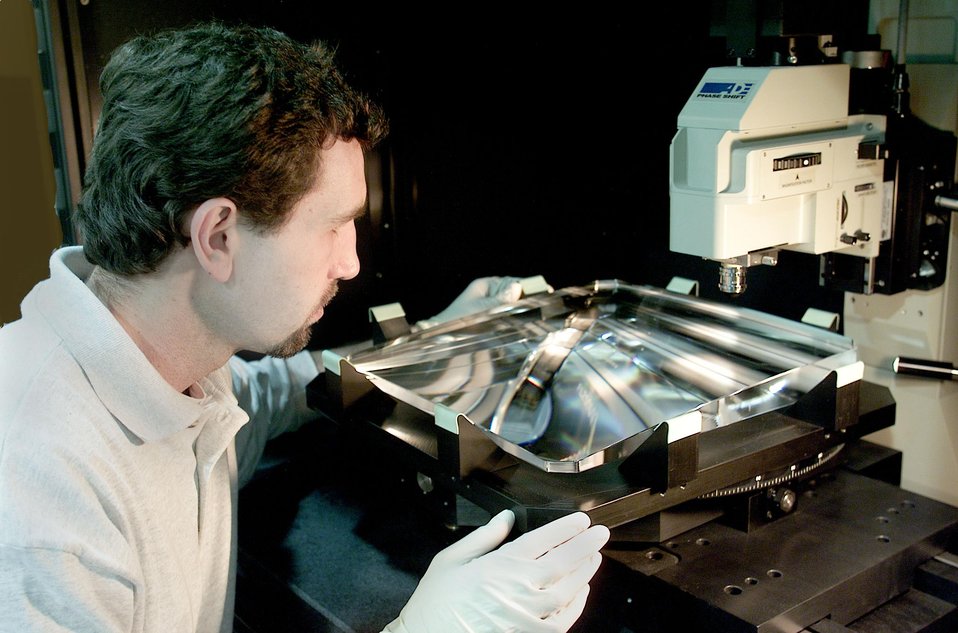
FINAL OPTICS ASSEMBLY-WEDGED FOCUS LENS DURING TESTING.

THE NATIONAL IGNITION FACILITY AT LLNL ENABLES KEY PROGRAMS AND TECHNOLOGIES THAT SUPPORT DOE'S NATIONAL NUCLEAR SECURITY ADMINISTRATION DEFENSE PROGRAMS AND LLNL MISSIONS, ENSURING THAT THE NATION'S NUCLEAR WEAPONS REMAIN SAFE, SECURE AND RELIABLE. NIF, ONE OF THE CORNERSTONES OF DOE'S STOCKPILE STEWARDSHIP PROGRAM, WILL INTEGRATE THE INERTIAL CONFINEMENT FUSION PROGRAM INTO THE OVERALL STOCKPILE STEWARDSHIP PROGRAM AND FOSTER THE DEVELOPMENT OF ASSOCIATED LASER TECHNOLOGIES.